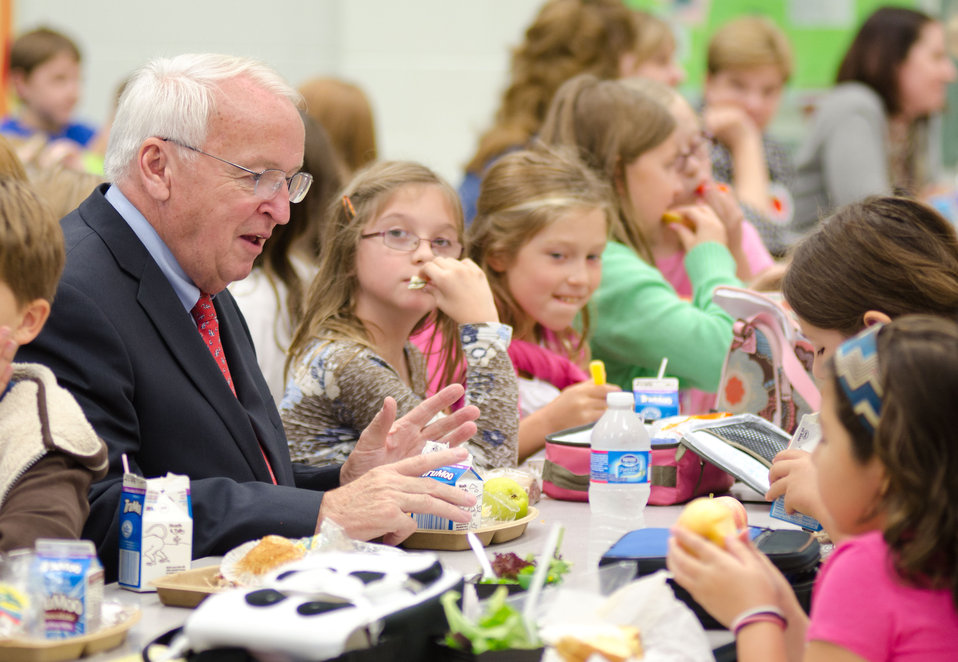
Under Secretary for Food, Nutrition and Consumer Services Kevin Concannon (red tie) spoke with his lunch mates during the school lunch program at Nottingham Elementary School in Arlington, VA, on Wednesday, October 12, 2011. Today's menu included roasted chicken, roasted butternut squash with dried cranberries, farm fresh mixed lettuce salad, turkey wraps, pita wedges, hot muffins, carrots, pears and more choices.